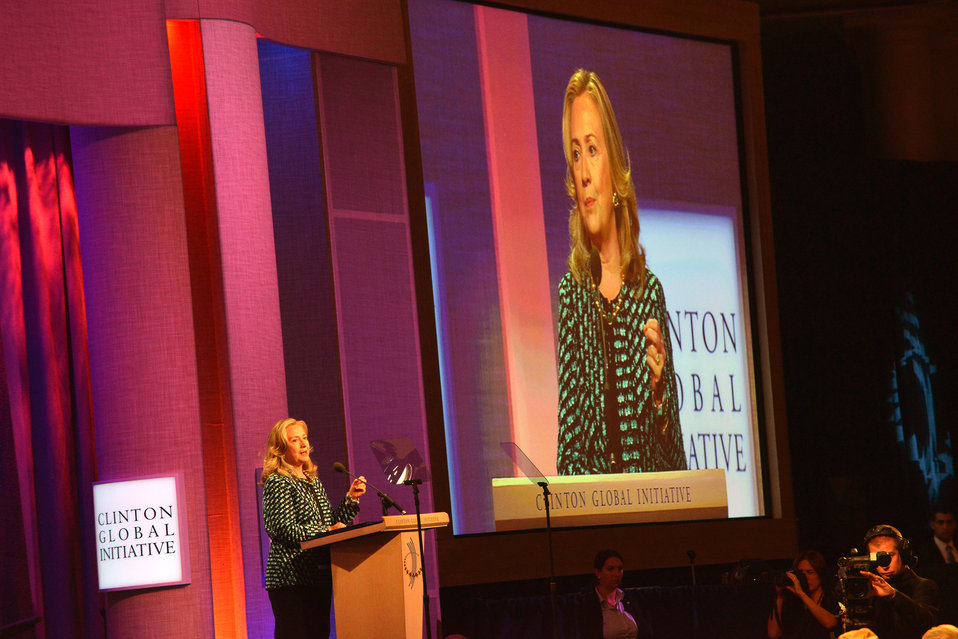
Secretary Clinton Delivers Remarks at the Clinton Global Initiative

U.S. Secretary of State Hillary Rodham Clinton delivers remarks at the Clinton Global Initiative in New York, New York on September 24, 2012.